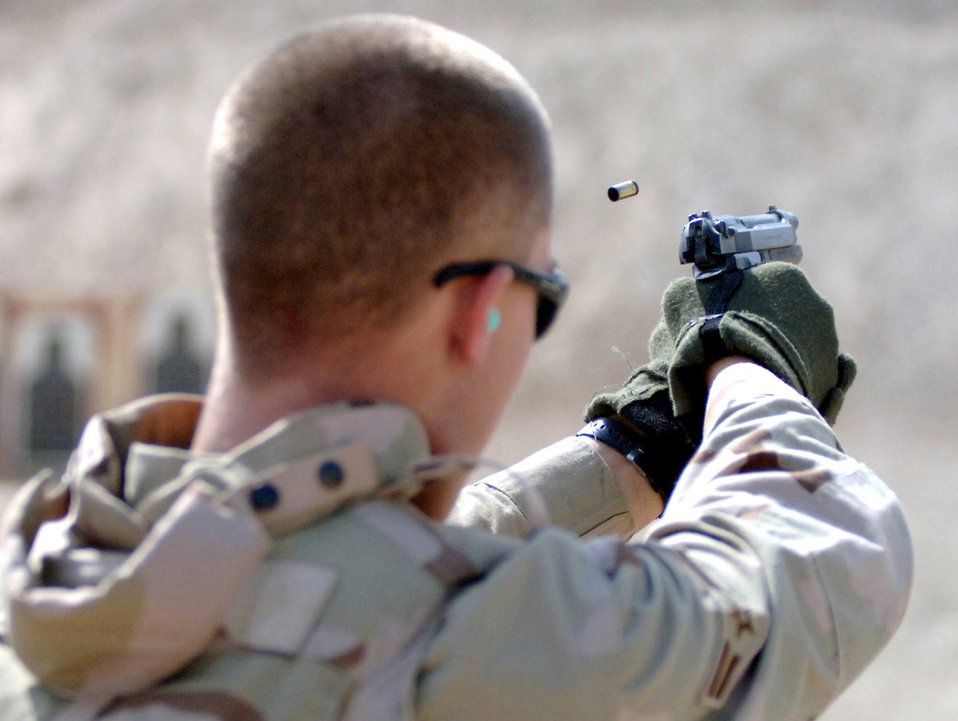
On target

Airman 1st Class Brandon Newton fires an M-9 Beretta during a match at Victory Base Complex, Iraq, on Monday, July 3. Nine teams from Sather Air Base and Iraqi New Al Muthana Air Base competed, testing their endurance, skill and marksmanship. Airman Newton is assigned to the 447th Air Expeditionary Group.